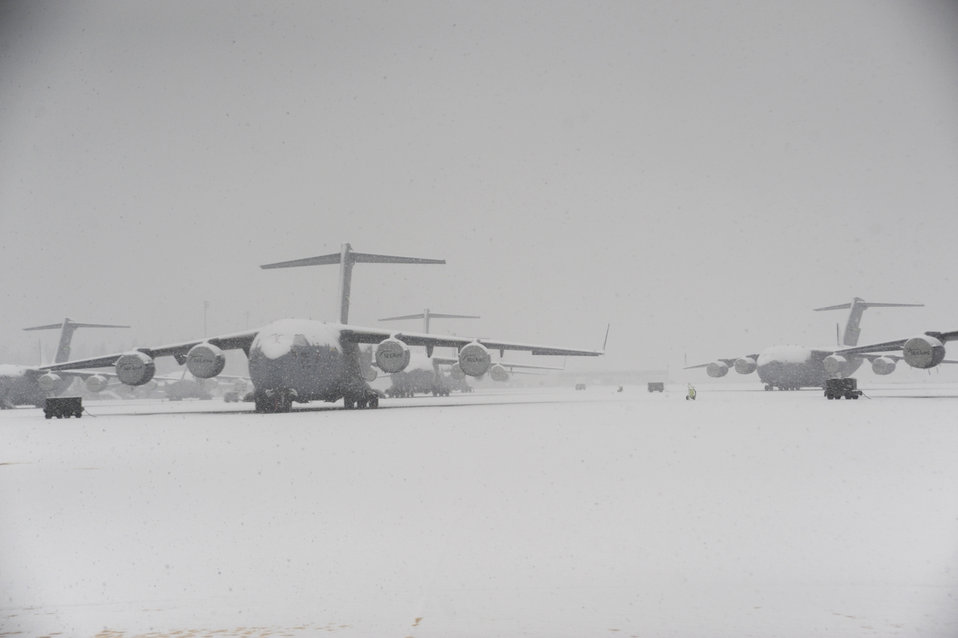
Snow sorties

The first snowfall of the season caused more than two inches of snow to accumulate on the flightline Nov. 22, 2010, at Joint Base Lewis-McChord, Wash. Despite the snowfall, McChord Airmen worked to generate five sorties.